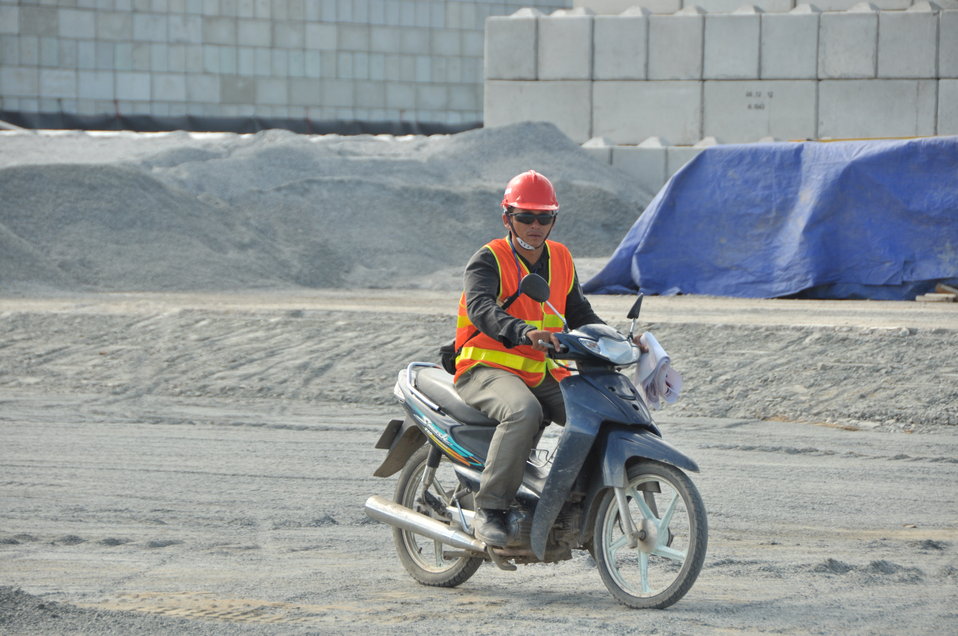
Site construction at the Environmental Remediation of Dioxin Contamination at Danang Airport

Progress at the Danang Airport remediation site
April 23, 2013